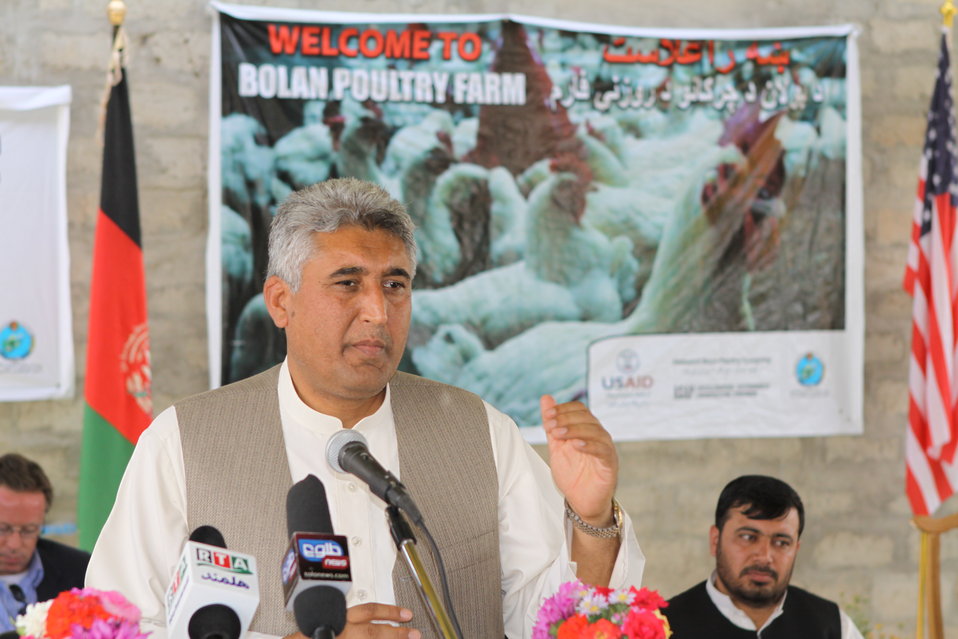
Bolan Poultry Farm